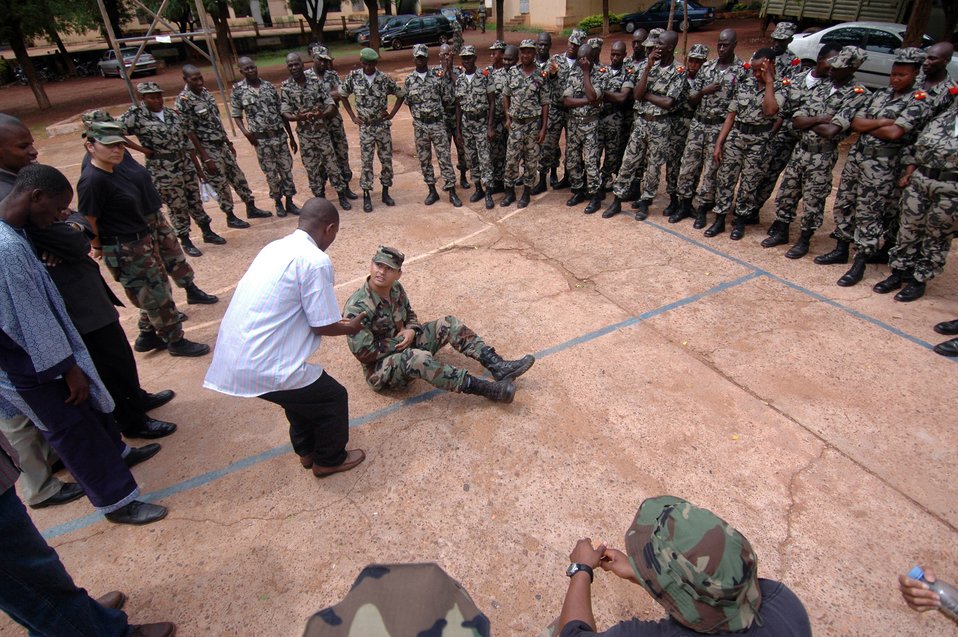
Malians learn life-saving techniques

Staff Sgt. Carlos Lomeli simulates an injury for Malian medics and nurses to learn how to properly triage patients July 15 during MEDFLAG 08. Malian medics and nurses received their first-ever mass casualty training July 15 in Kati, Mali, 15 kilometers outside the capital city of Bamako. Sergeant Lomeli is assigned to the 48th Medical Group, Royal Air Force Lakenheath, England.